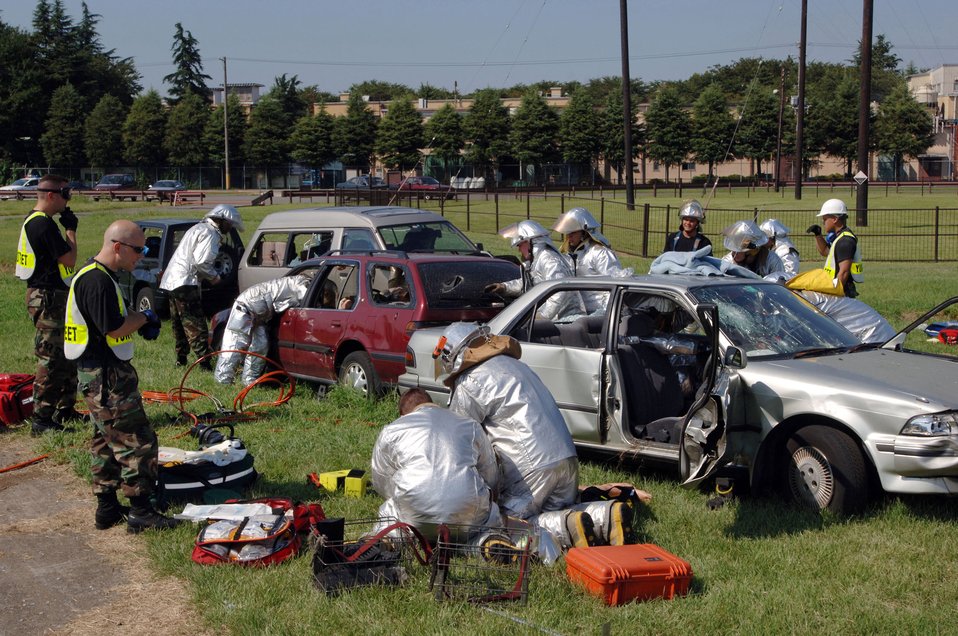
Training day

YOKOTA AIR BASE, Japan -- Firefighters with the 374th Civil Engineer Squadron participate in a rescue training exercise here Sept. 14.